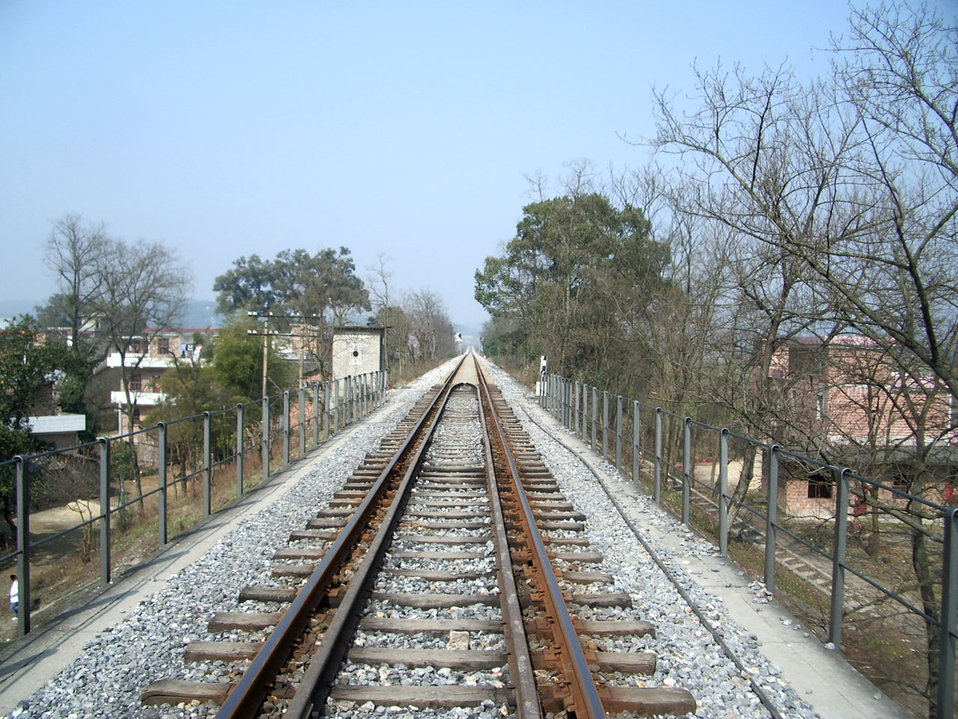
Train tracks anfu china.